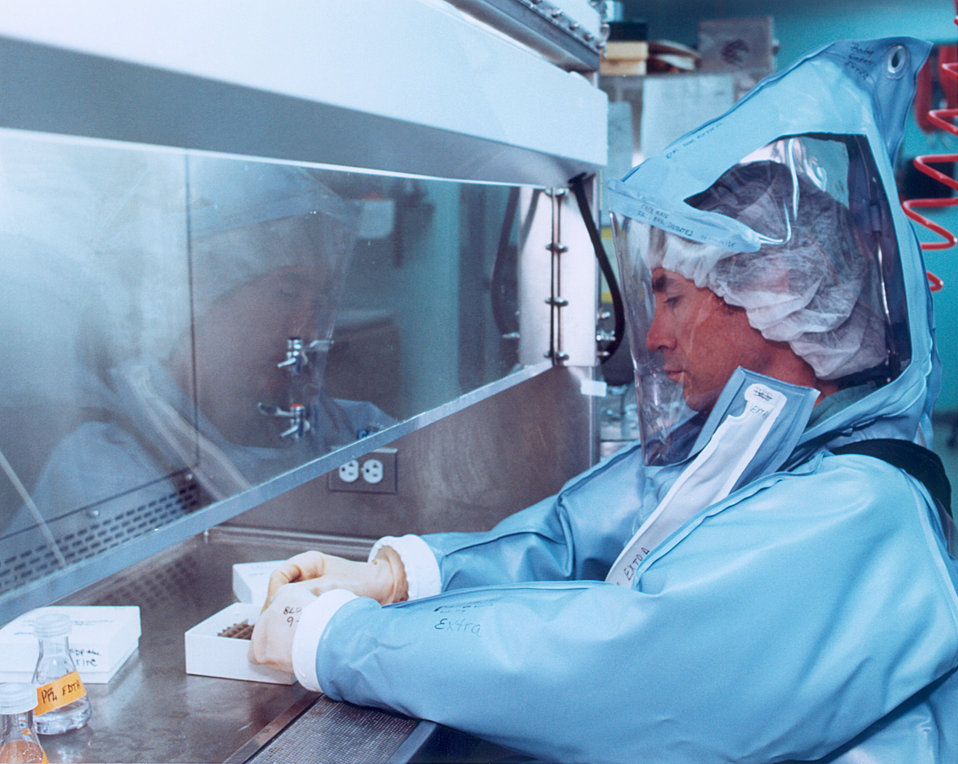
A CDC scientist conducts laboratory research in the Biosafety Level 4 laboratory, Atlanta, GA.